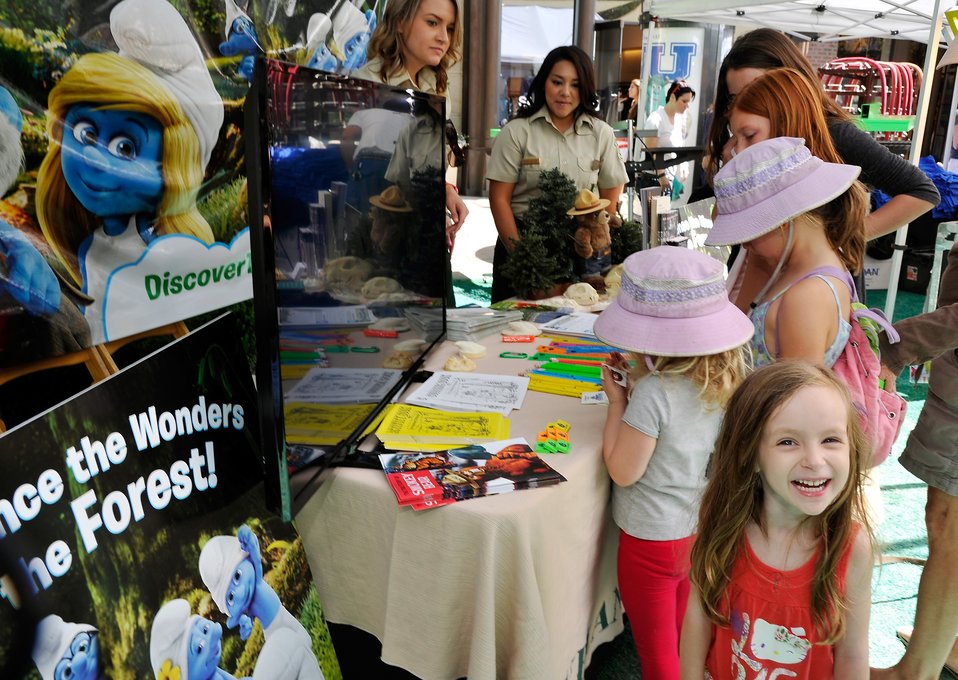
Young Smurf fans visit the U.S. Forest Service’s booth during a community outreach event promoting the Discover the Forest campaign in Los Angeles, CA. To encourage children and adults to “unplug” and get outdoors, the U.S. Forest Service’s Discover the Forest campaign has partnered with Sony Pictures to launch a series of public service announcements (PSAs) and educational materials featuring characters from the animated adventure, The Smurfs 2. The PSAs and the educational materials aim to encourage parents, caregivers and their children to go out to the forest to experience the wonder and magic of nature.